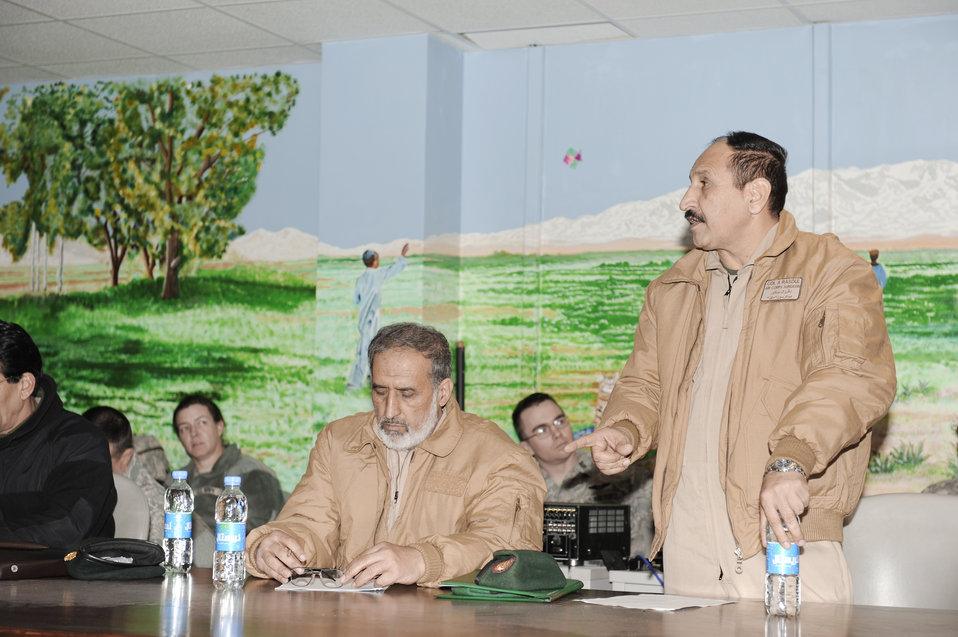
ANAAC Conference

Col. Abdul Rasoul, Afghan National Army Air Corps surgeon general, briefs at an ANAAC and coalition forces meeting March 6, 2010, at the Craig Joint Theater Hospital at Bagram Airfield, Afghanistan. During this meeting Afghan and coalition forces discussed the evolution of the medical evacuation mission in Afghanistan.